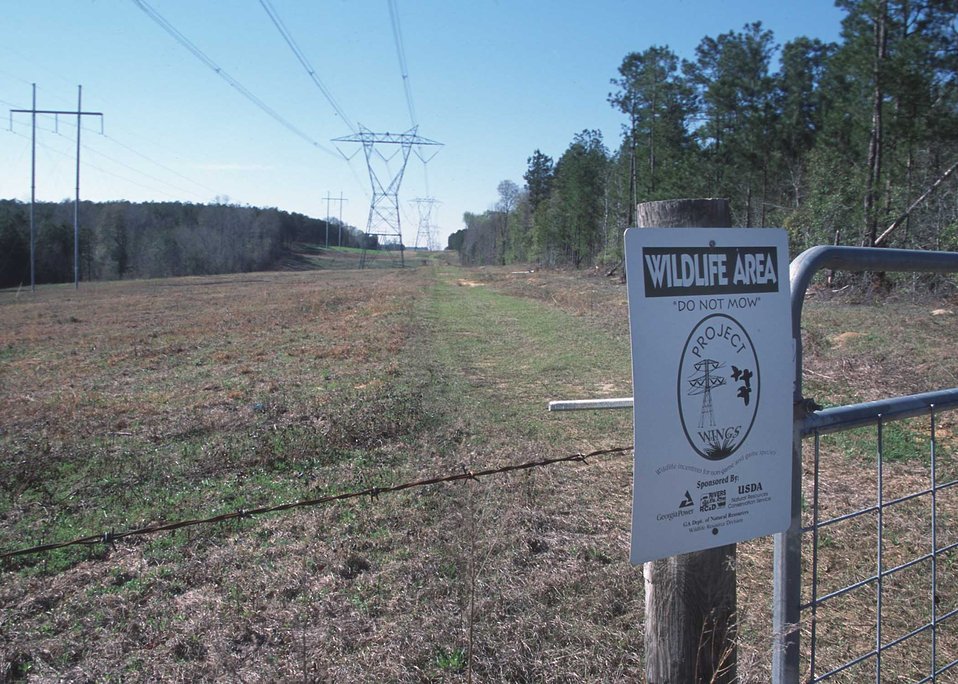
Project Wings foodplots of wheat under Georgia Power Company transmission lines. Project implemented with the assistance of NRCS, RC&D, and Georgia Power.